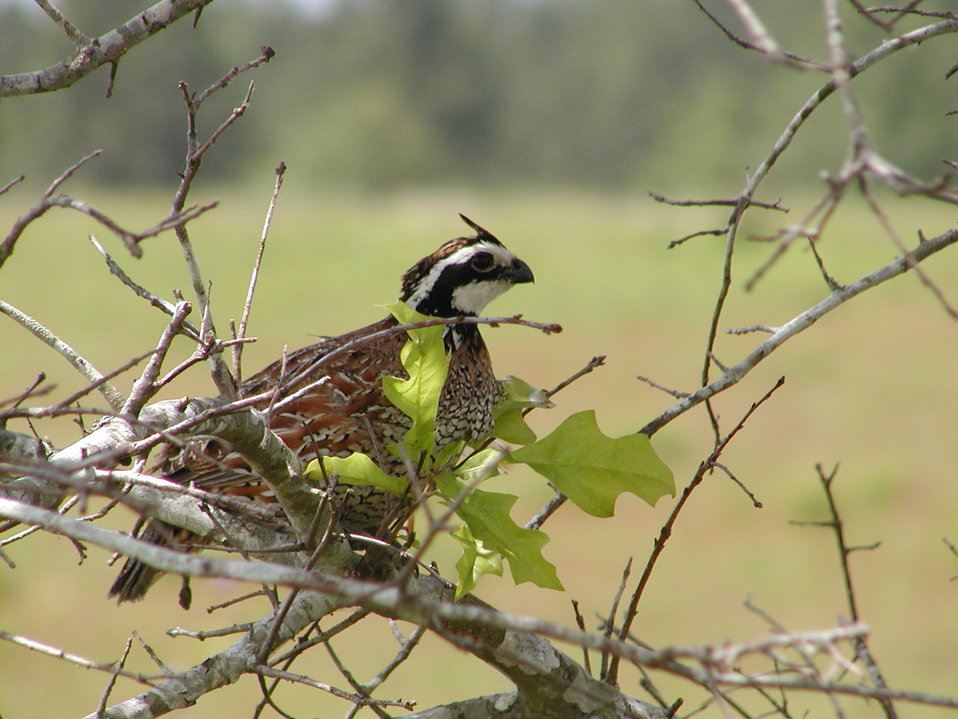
Bobwhite quail

The bobwhite quail, Georgia’s official State Gamebird, lives in the longleaf ecosystem.